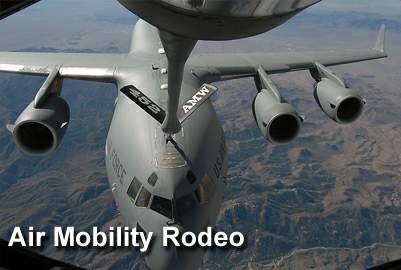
Doolittle Raiders to attend Air Mobility Rodeo

Three Doolittle Raiders will attend the 2009 Air Mobility Rodeo July 19 through 24 at McChord Air Force Base, Wash. More than 2,500 Mobility Airmen from around the globe participating in the biannual, multinational readiness competition compete in core AMC capabilities of air drop, air refueling, aeromedical evacuation and cargo delivery operations.